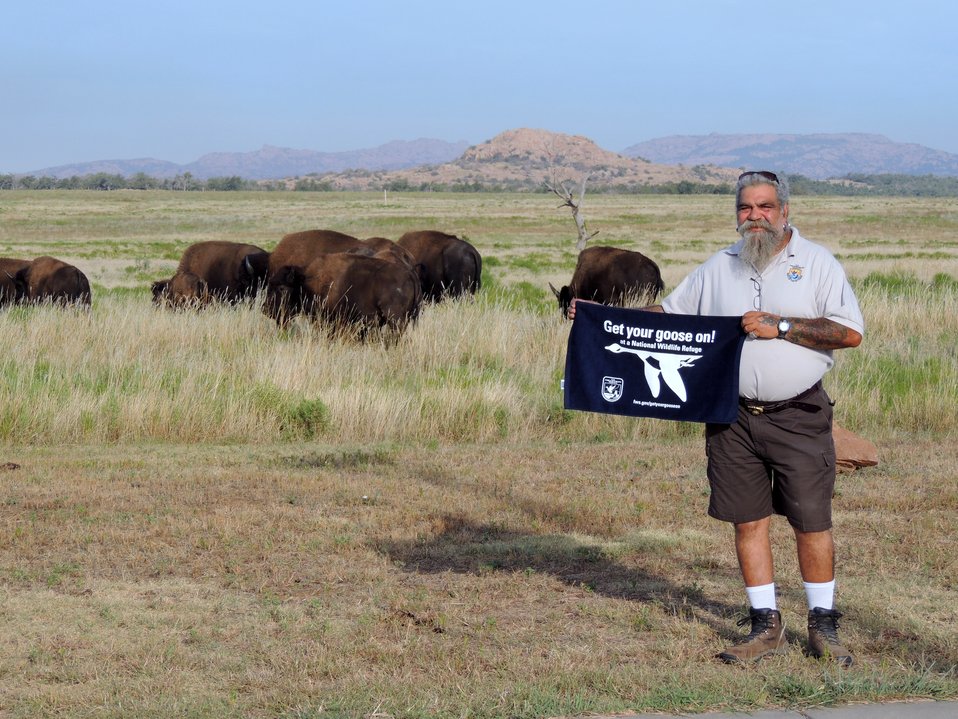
Get Your Goose On

Wichita Mountains National Wildlife Refuge in Oklahoma.